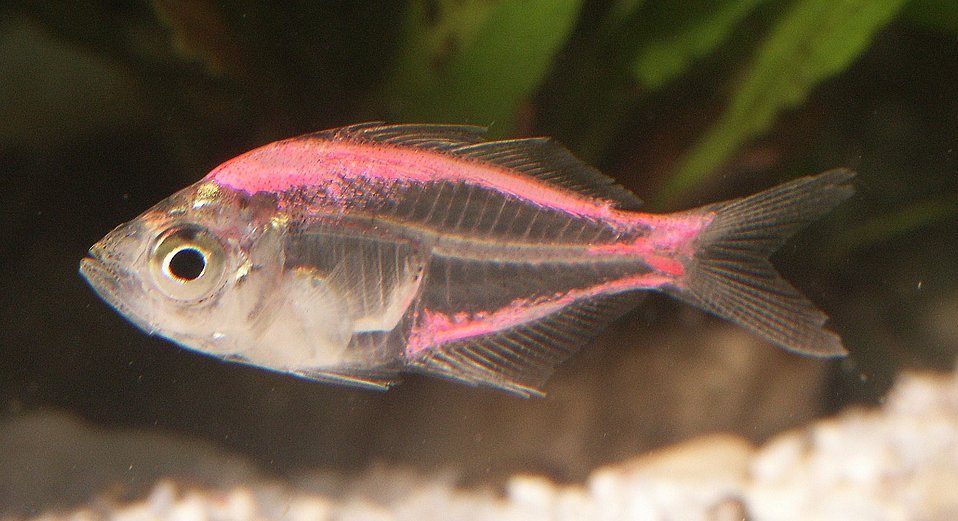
quoted from w:en:Image:Painted Indian Glassy Fish.jpg: 'Painted or Dyed Indian Glassy Fish, Parambassis ranga. Pink version shown. These fish are artificially injected with dye to give this fish some colour. You get blue, cyan, green, pink, etc. versions. The colour fades within 6 months. This image was taken by --Quatermass 14:07, Dec 21, 2004 (UTC)'